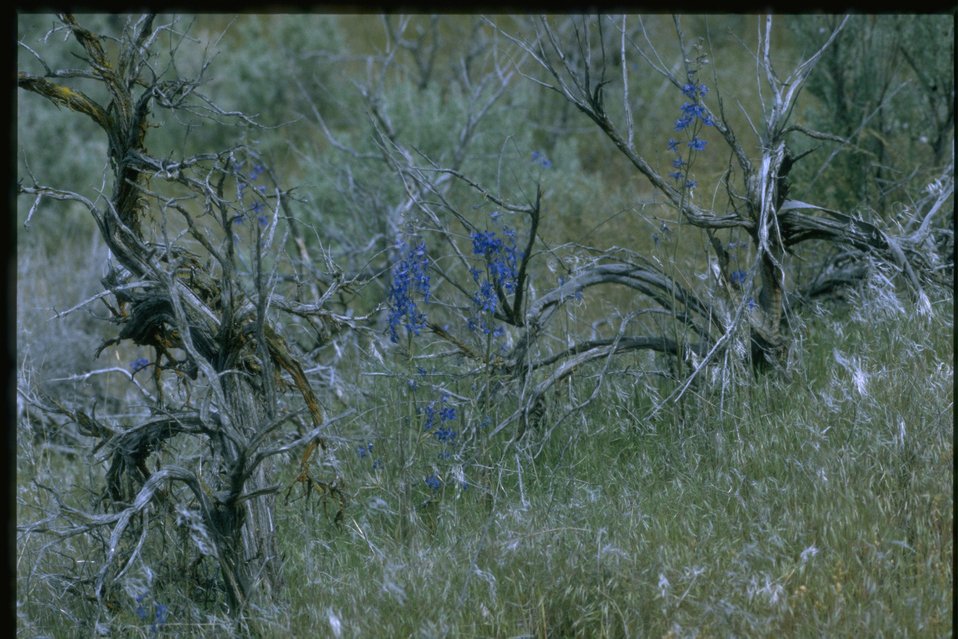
Medium shot of Larkspur habitat.